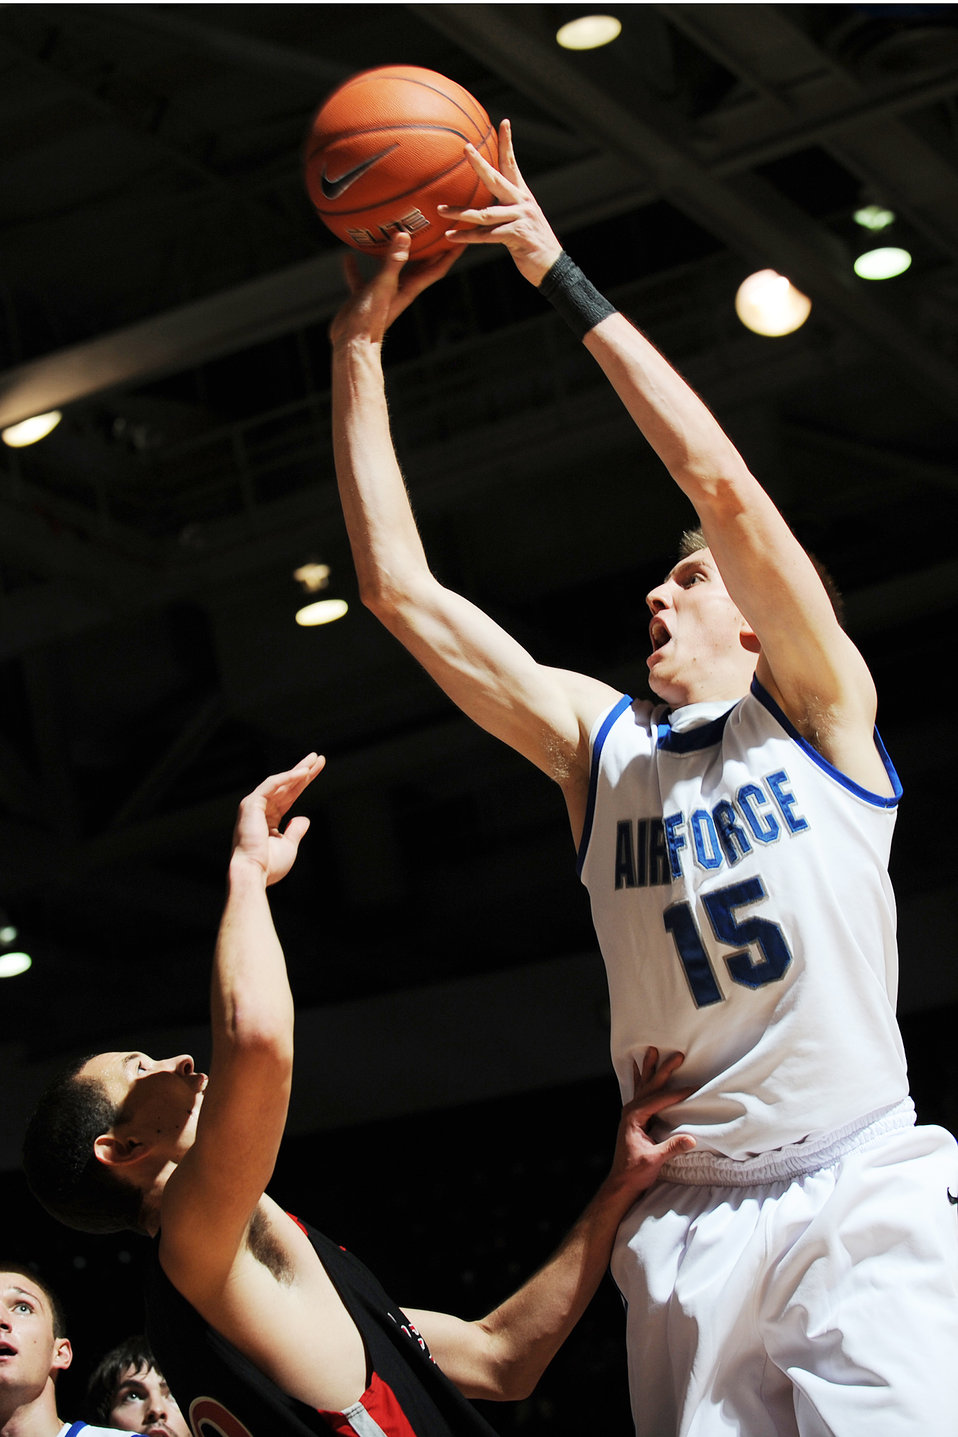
Falcons reign supreme in season opener

U.S. Air Force Academy Falcon sophomore Taylor Stewart goes up for a shot against Western State defenders during the Falcon season opener Nov. 13, 2009 in Clune Arena at the U.S. Air Force Academy, Colo.